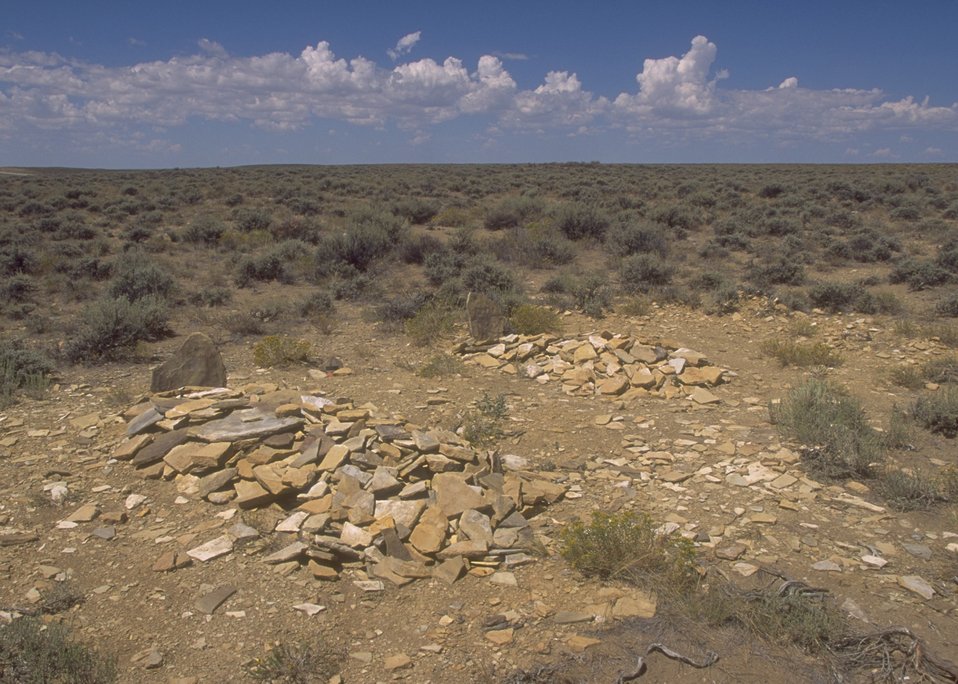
Location of original grave sites (remains have been relocated) at the Indian Emigrant relations interpretive area along the Oregon Trail, Rock Springs Field Office.